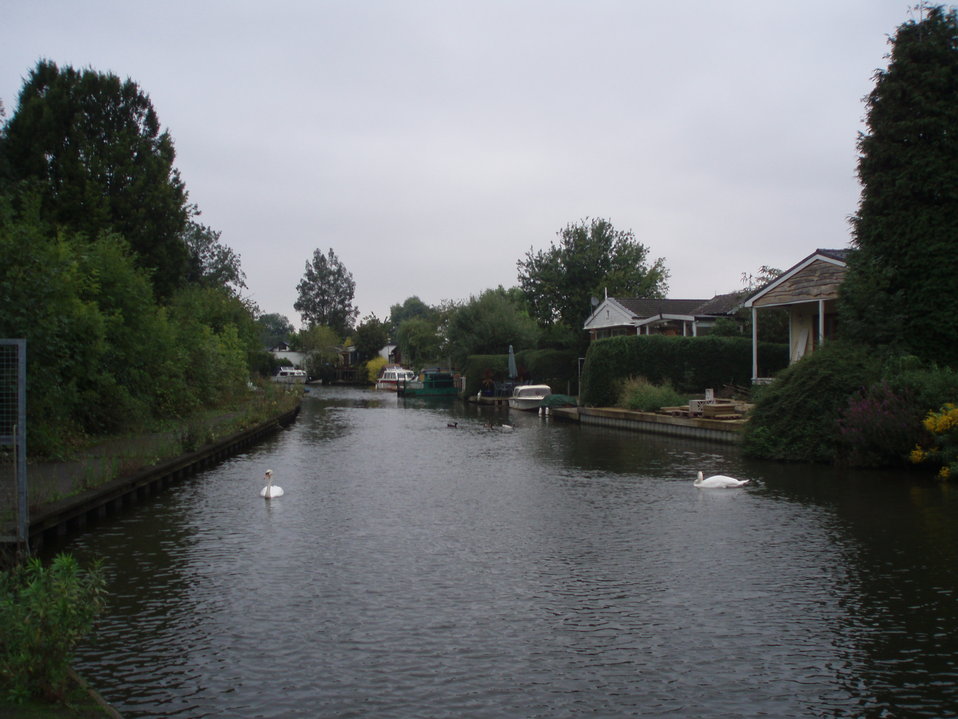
Photo taken 23rd August 2007 Category:Islands of the River Thames